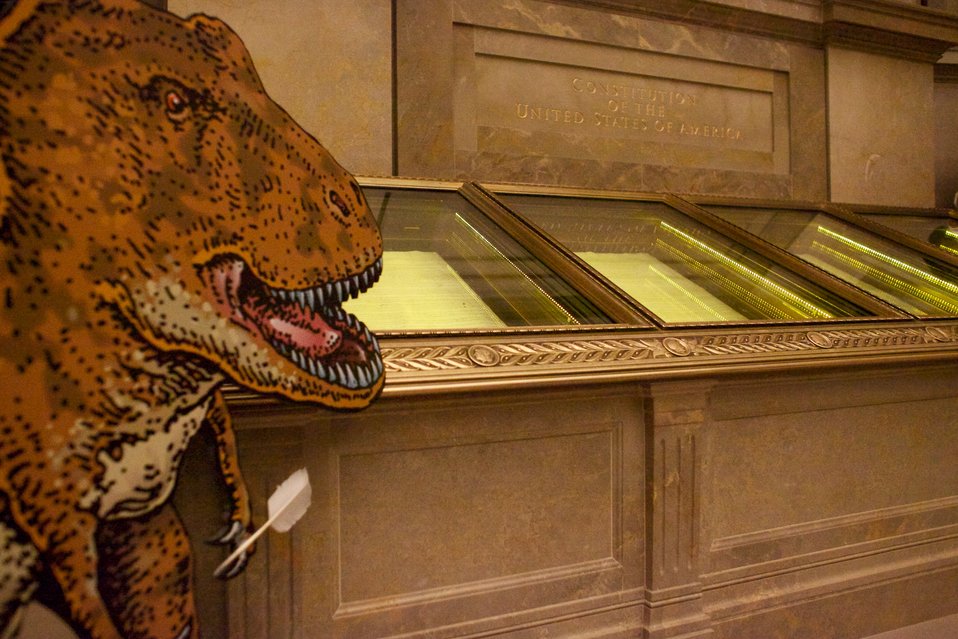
Smithsonian Institution's TRex visits the National Archives